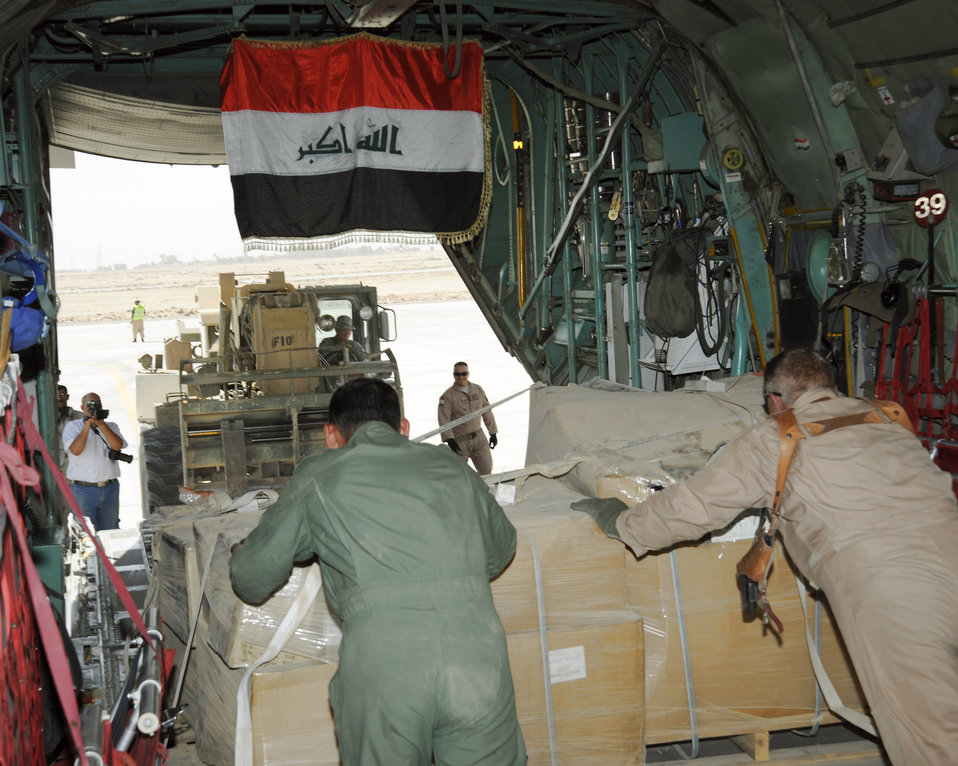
Iraqi relief

An Iraqi aircrew pushes a pallet off an Iraqi C-130 Sept. 22 at an air base in Iraq. This was the first Iraqi air force C-130-supported humanitarian airlift to Najaf, Iraq. The supplies are to be donated to internally displaced Iraqis at Camp Al-Manathera.